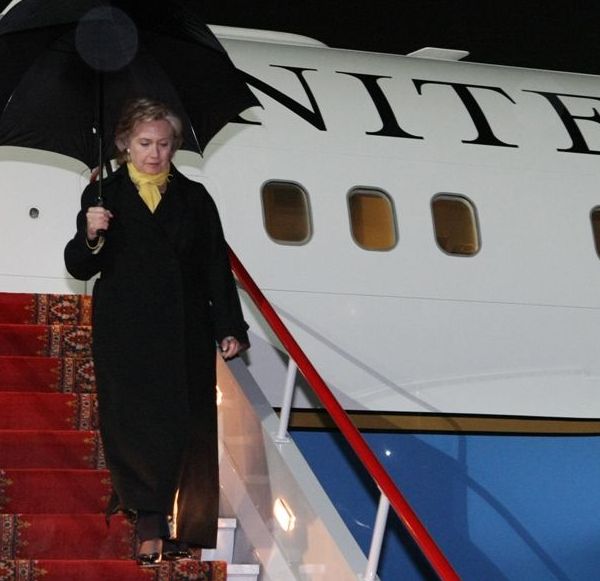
Secretary Clinton Arrives in Moscow

U.S. Secretary of State Hillary Rodham Clinton arrives in Moscow, Russia, October 12, 2009.